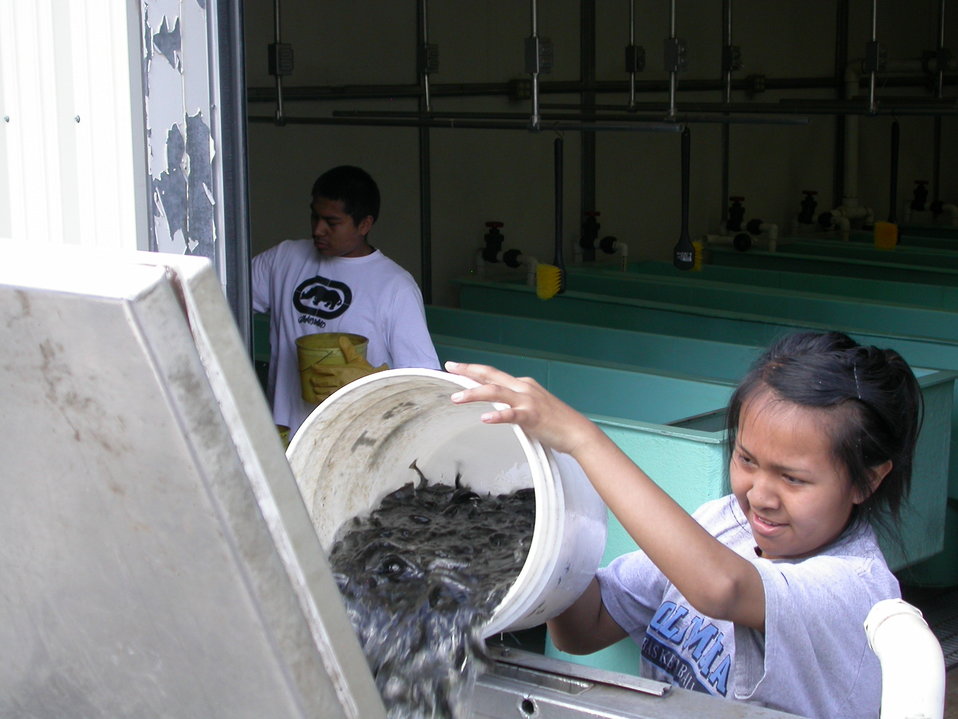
Working in a Fishery